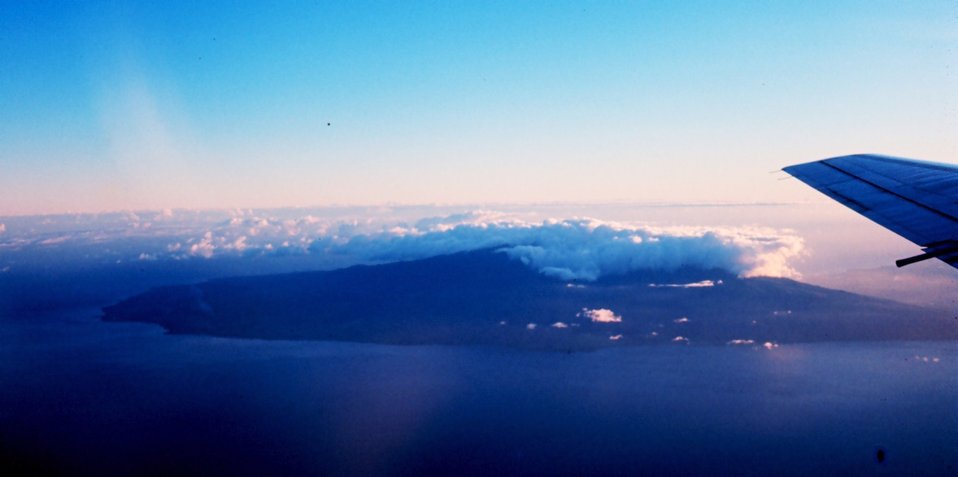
Aerial view of a Hawaiian island.